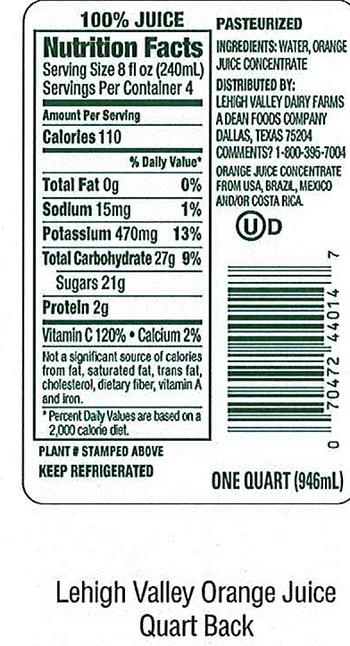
RECALLED – Orange Juice

March 3, 2014 – Product Recall – Lehigh Valley Dairy Conducts Voluntary Recall of Lehigh Valley, Swiss Premium, and Price Chopper Brand Orange Juice Because It May Contain Undeclared Allergen (Milk).